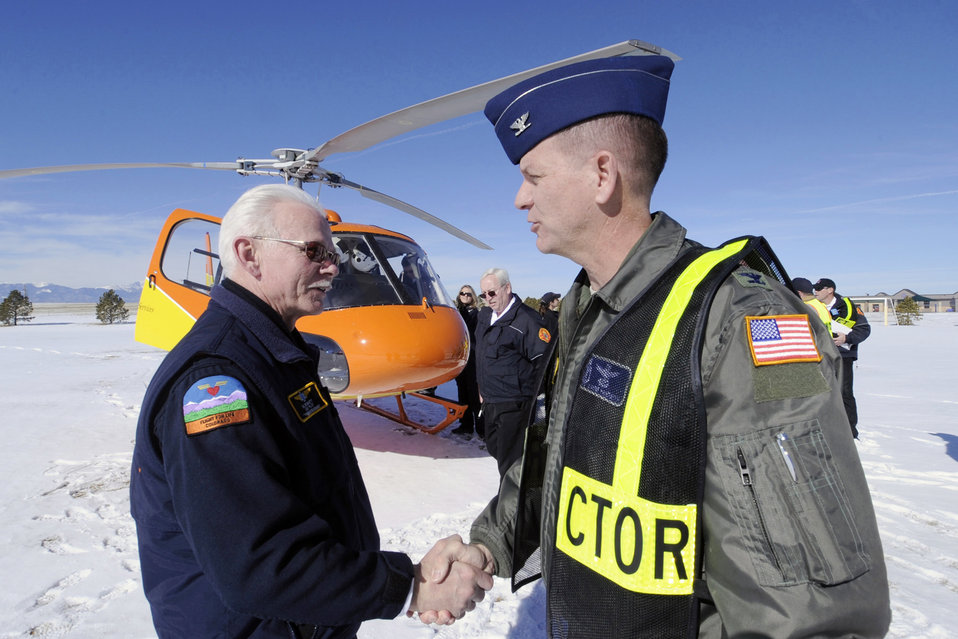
Schriever trains for emergencies

Col. Wayne Monteith, 50th Space Wing Commander, greets Flight for Life Colorado pilot Bill Bennett after the crew's arrival at Schriever Air Force Base during an exercise Feb. 10, 2010. Mr. Bennett and his paramedic crew participated in the exercise scenario to add realism.